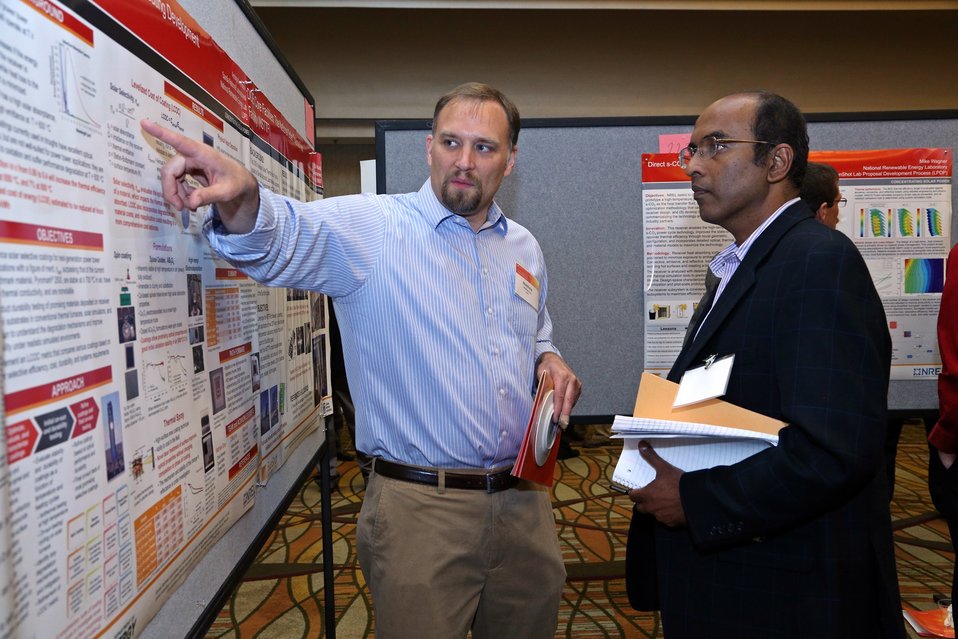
Tech Forum 26

Attendees and awardees discuss posters at the Tech Forum.